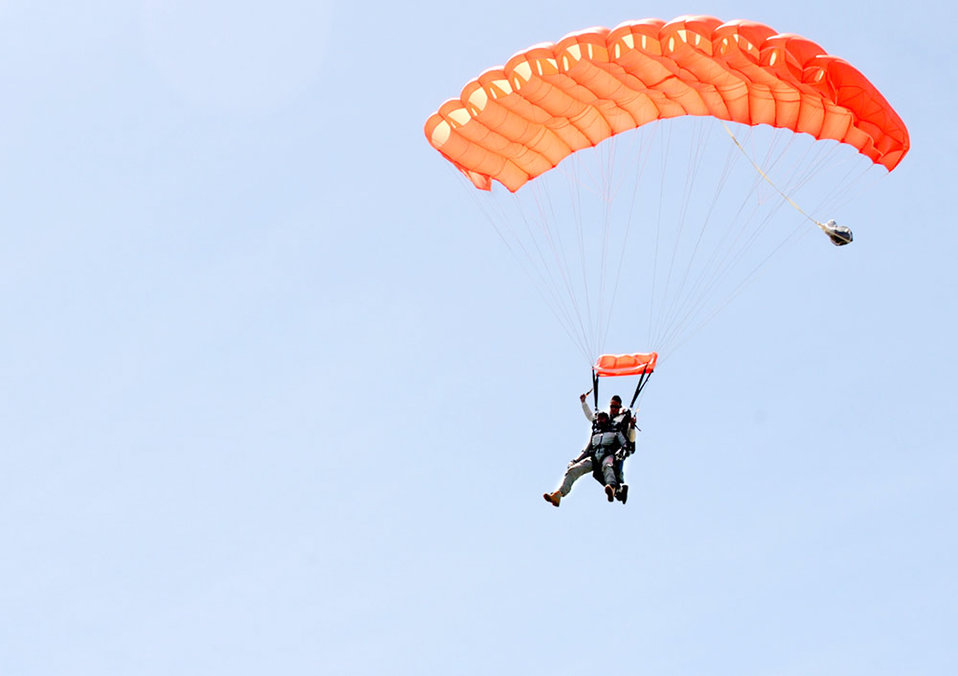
Airmen 'Jump into Prevention'

Staff Sgt. Courtney Stanton prepares to land after sky diving for the